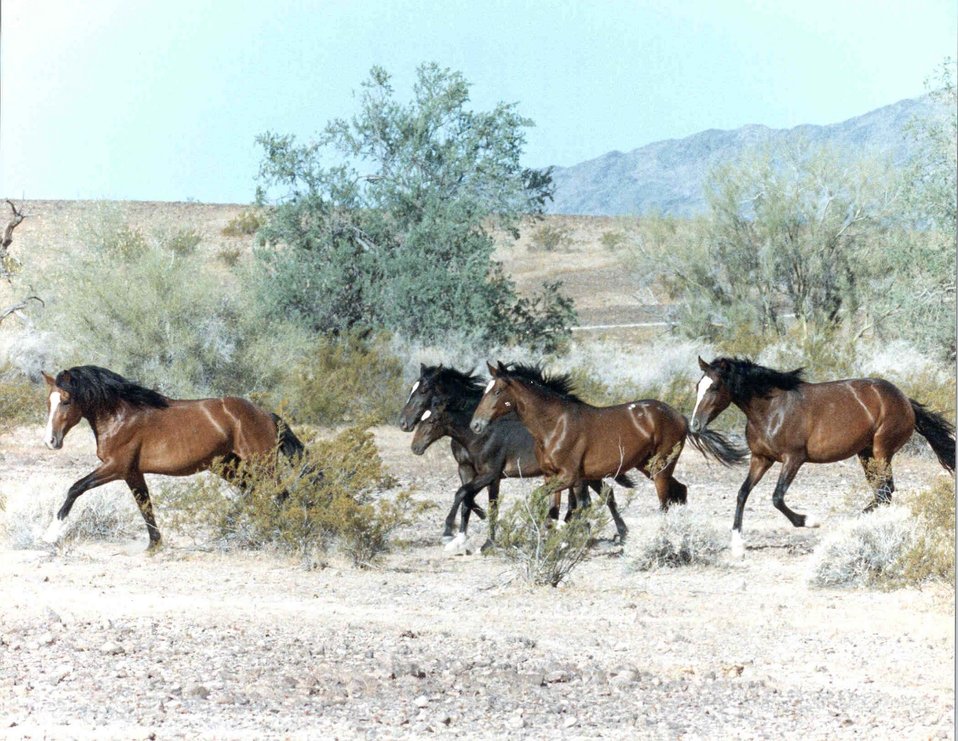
Wild horses running through the desert